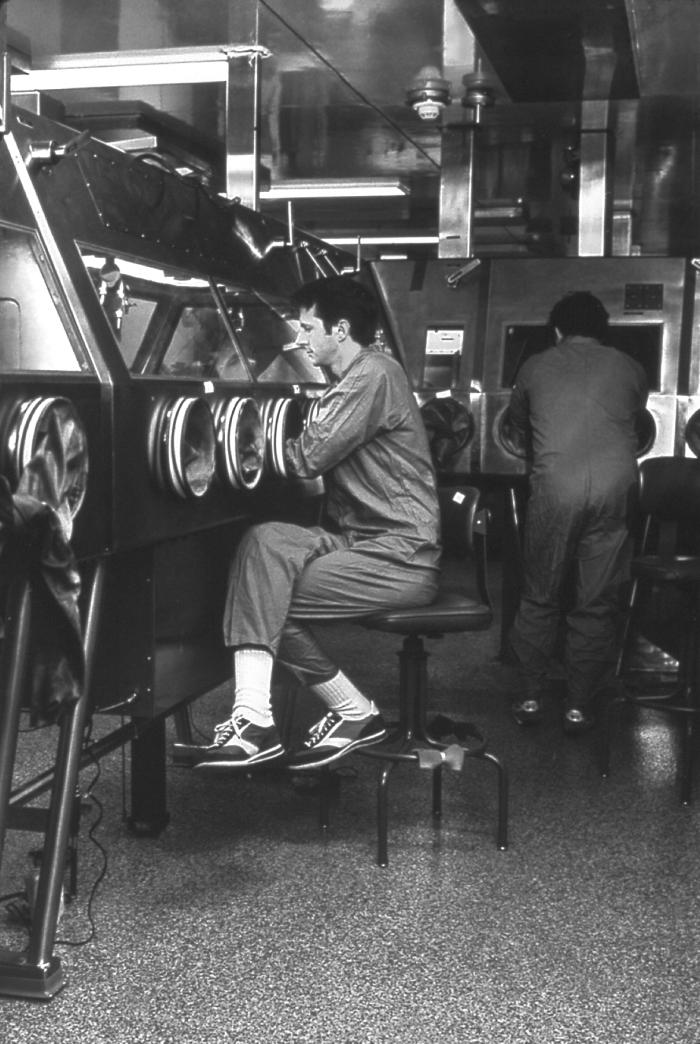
This 1978 photograph depicted Dr. Russell Regnery, and Dr. J.V. Lange as they were seated in a CDC Maximum Containment 'Cabinet Lab'. Both doctors had their hands inserted into the cabinets through protected air-tight gloved portals.